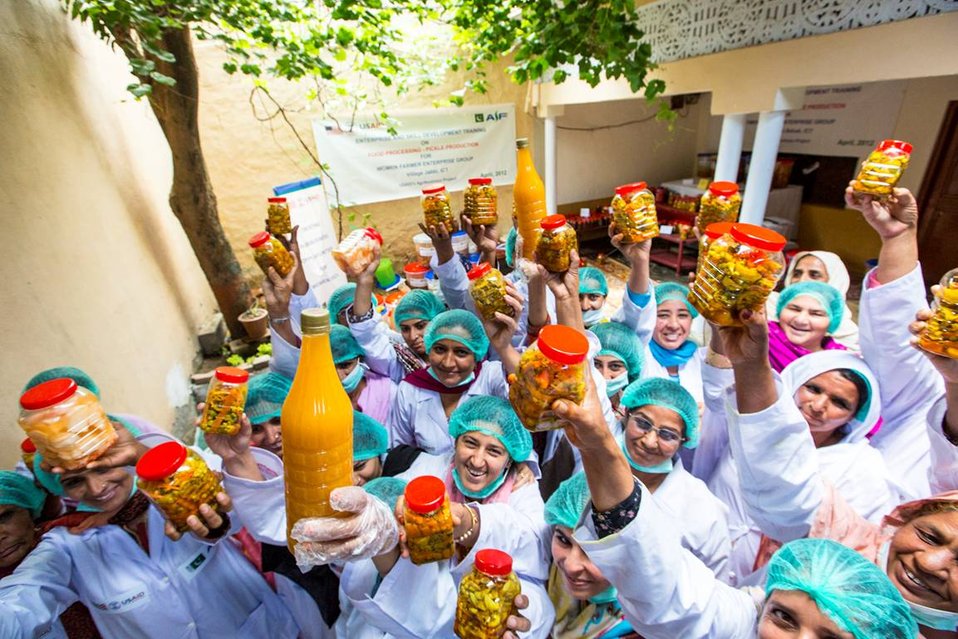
USAID's Agribusiness Project Women FEG for Food Processing - Pickle Production at Village Jabbi

The Pickle Production Women Farmer Enterprise Group of Jabbi village, sup-ported by a grant from USAID
www.usaid.gov/pk/db/sectors/growth/project 750.html